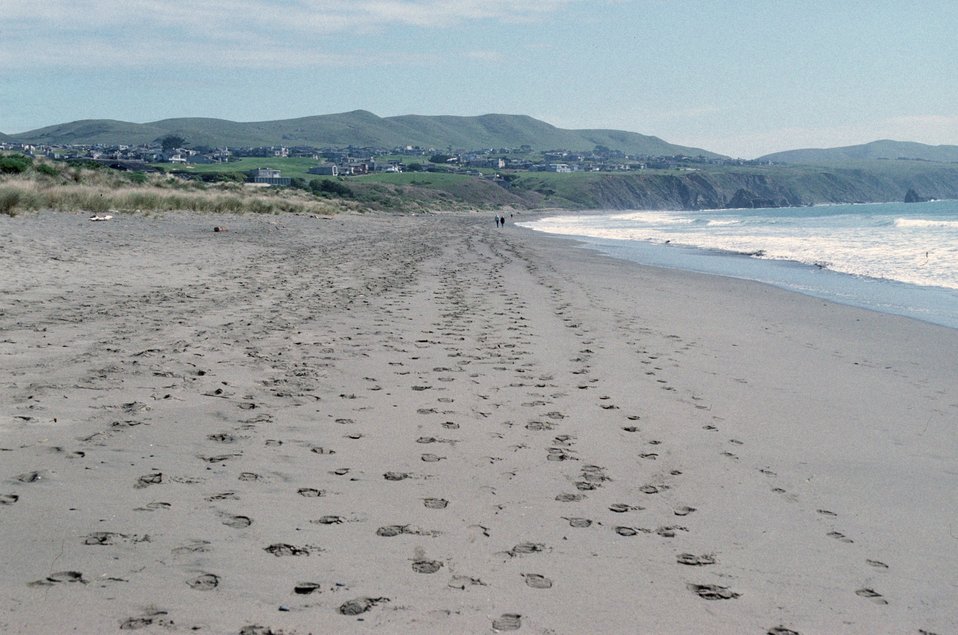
Doran Beach